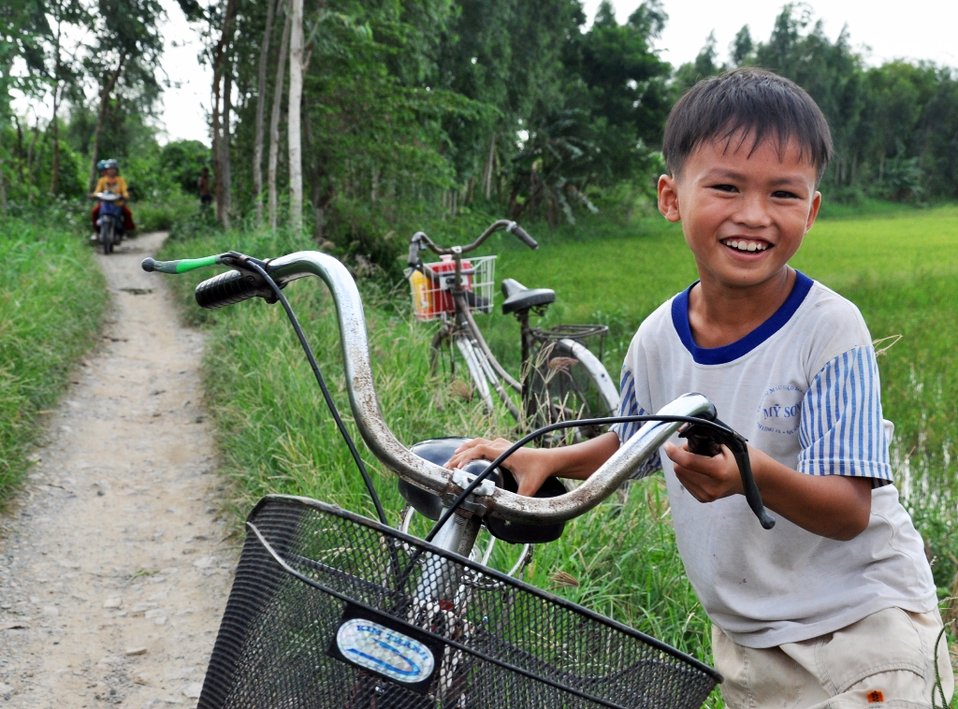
USAID helps local authorities combat bird flu from rural communities to markets throughout Vietnam

A boy pushes his bicycle through a duck farming area.